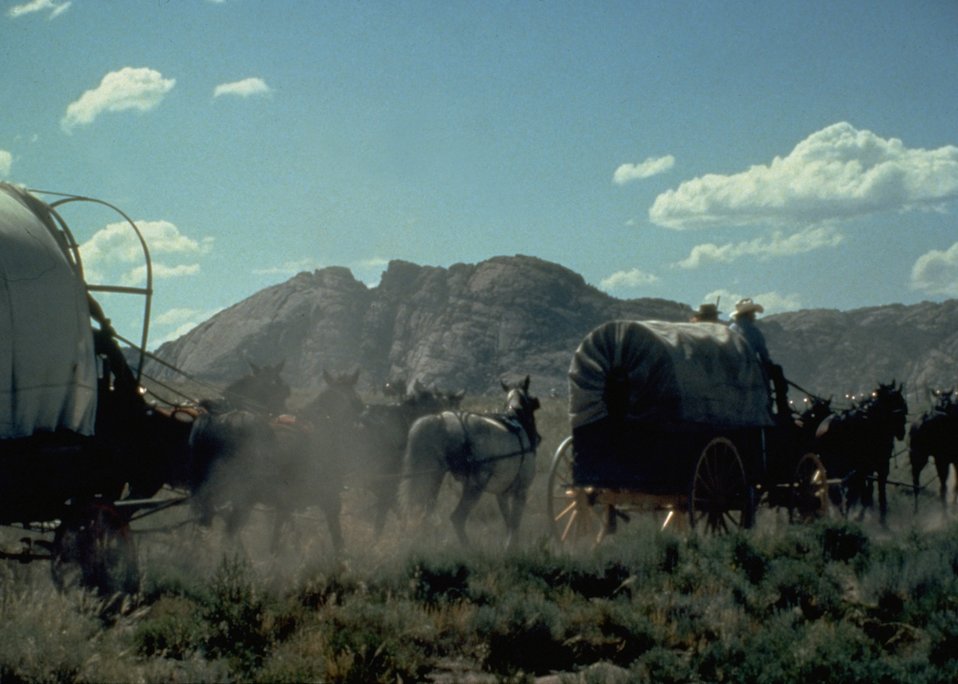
Horsedrawn wagon .